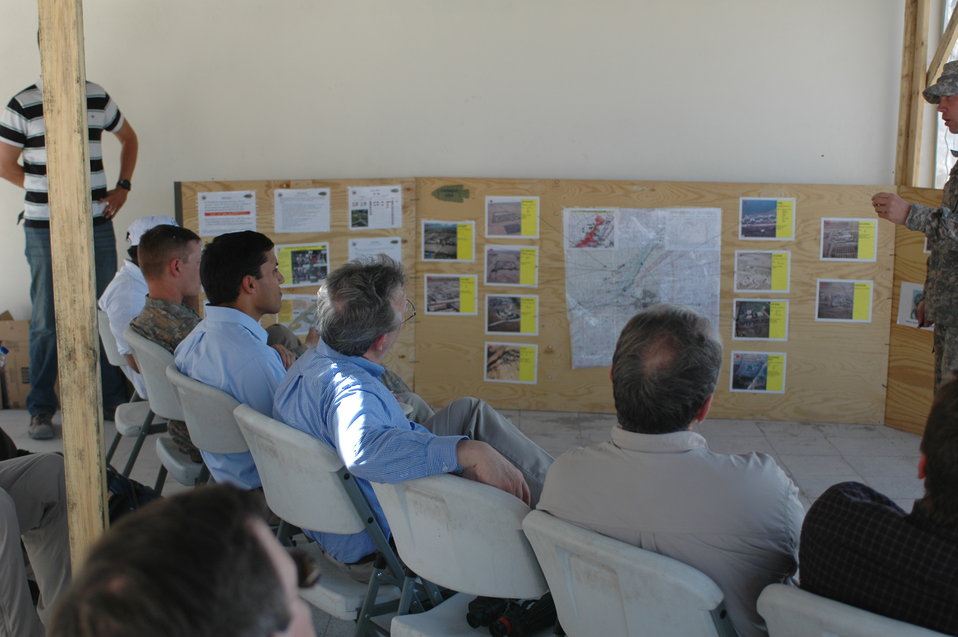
Dr Shah Visits Kandahar April 9, 2010